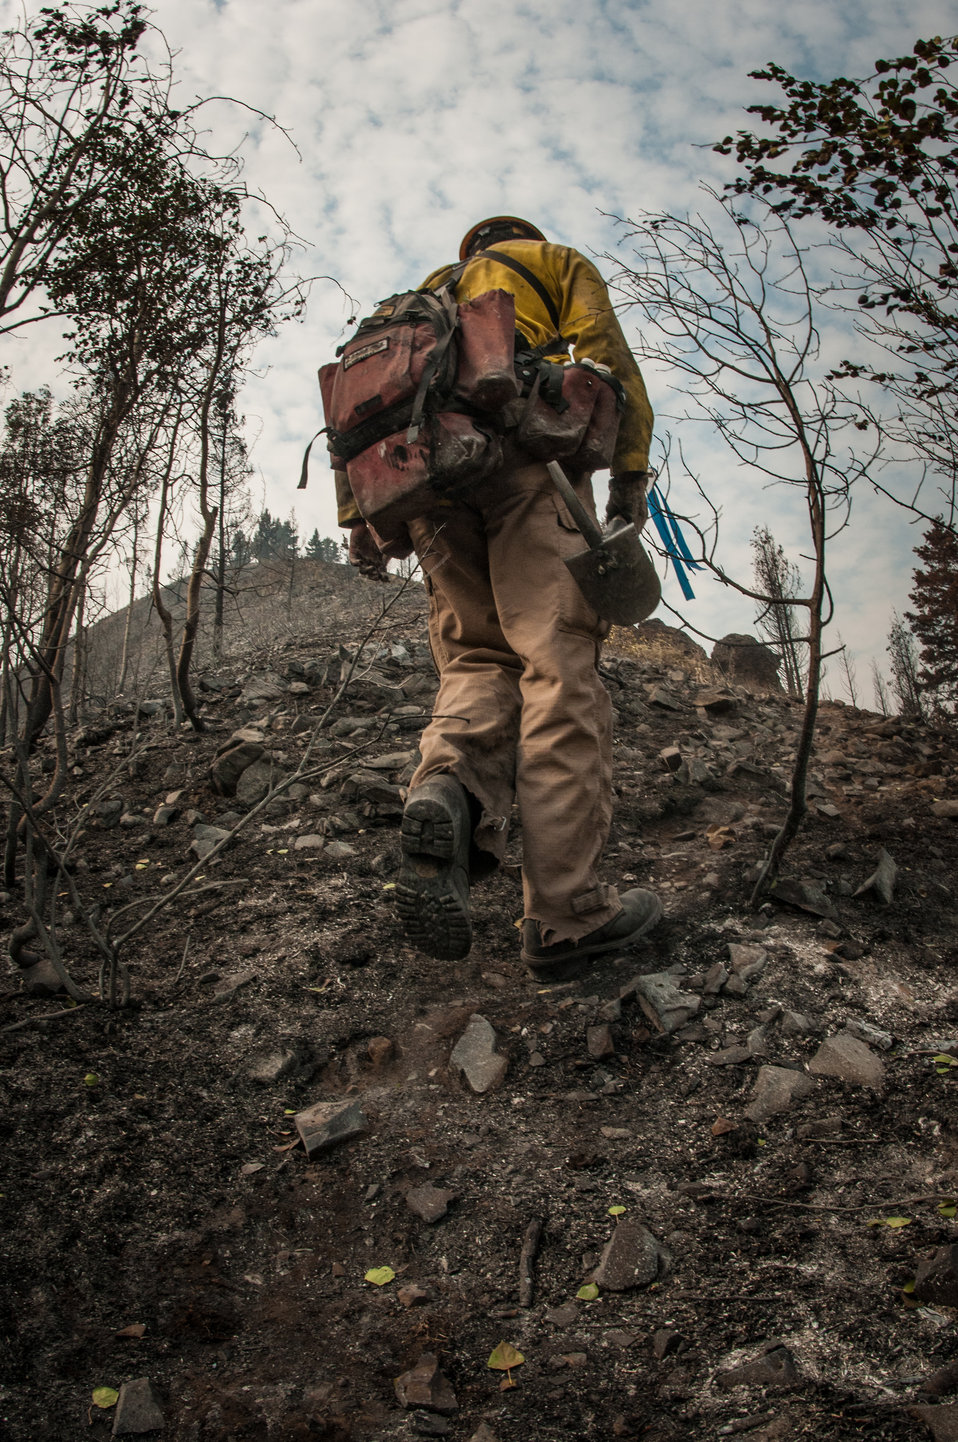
Department of the Interior, Indian Affairs (BIA) Southern Plains Initial Attack Type 2 Crew Squad Boss Trainee Bobby Robedeaux, of the Pawnee, Ponca and Otoe tribes, traverses a burned out hillside, looking and feeling for hotspots above and below the ground, during the Beaver Creek Fire, west of Hailey, ID, in the interface between U.S. Department of Agriculture (USDA) Forest Service (FS) and Sawtooth National Forest and Bureau of Land Management (BLM) lands, on Wednesday, Aug 21, 2013.